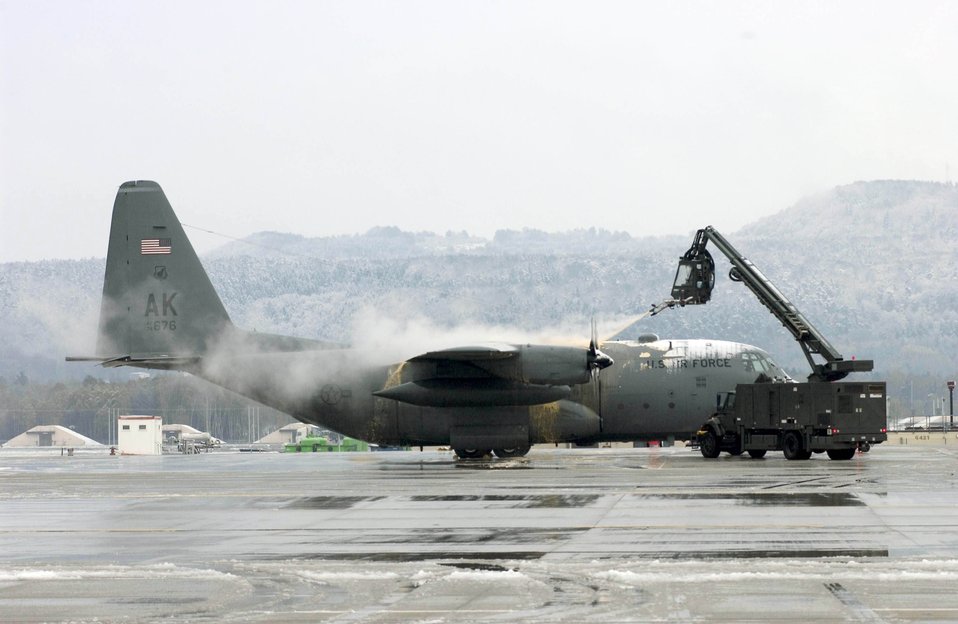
Snow job

RAMSTEIN AIR BASE, Germany -- High-pressure air and glycol are used to remove snow from a C-130 Hercules here early Nov. 10. A little more than an inch of snow blanketed the area. Glycol, an environmentally safe product, coats aircraft and helps prevent snow from accumulating.